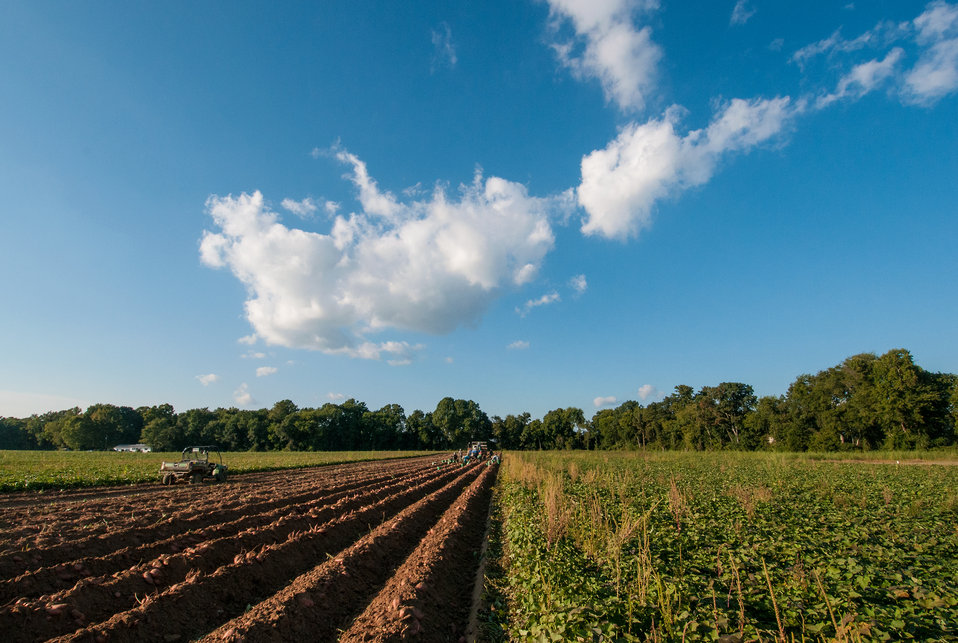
Large sweet potatoes, grown underground, are plowed up so migrant workers can carefully lift them to the top of the soil mound, trim off the greens, and sort the potatoes according to size at Kirby Farms in Mechanicsville, VA on Friday, Sep. 20, 2013. Kirby Farms is a third-generation family farm that covers 500 acres, and generates produce and grains on a year-around operation. Please see the photoset description for more information about this farm operation and harvest.